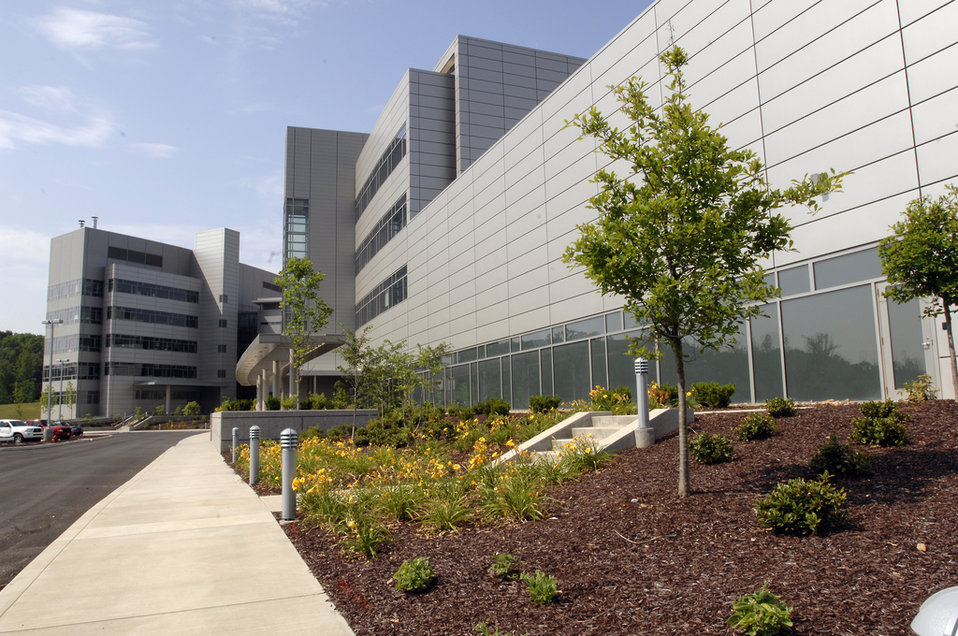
THE CENTER FOR NANOPHASE MATERIALS SCIENCES AT OAK RIDGE NATIONAL LABORATORY IS EQUIPPED WITH WORLD-CLASS INSTRUMENTS AND STAFFED BY RESEARCHERS IN A VARIETY OF SCIENTIFIC DISCIPLINES.

The center allows researchers from universities, laboratories and industry to create test and characterized a variety of materials at a molecular level.